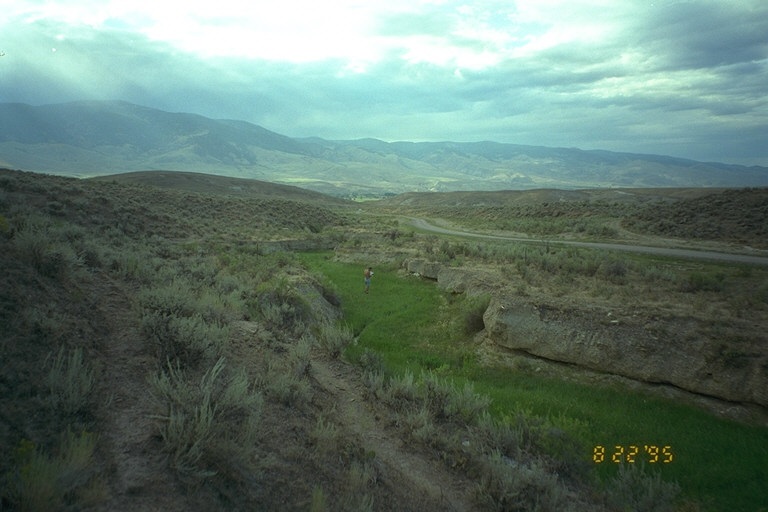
Riparian area Public Lands Salmon Field Office UCSC Upper Columbia Salmon Clearwater District